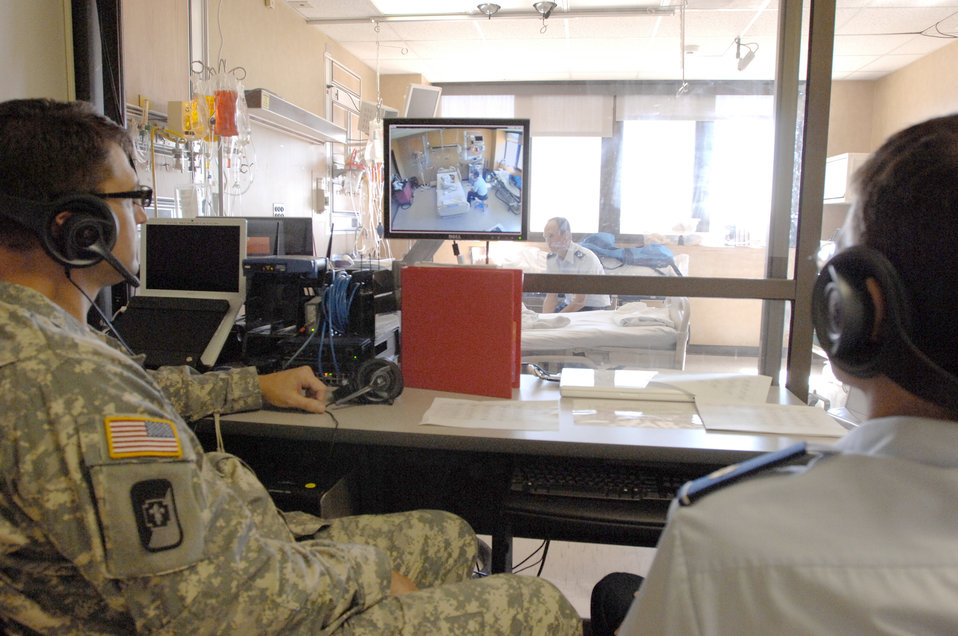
Program Director Development Course

Military physicians observe a training session during a program director development course Sept. 28, 2010, at Wilford Hall Medical Center, at Lackland Air Force Base, Texas. The course, designed to train program directors for the Graduate Medical Education program, is run by the Uniformed Services University of the Health Sciences.